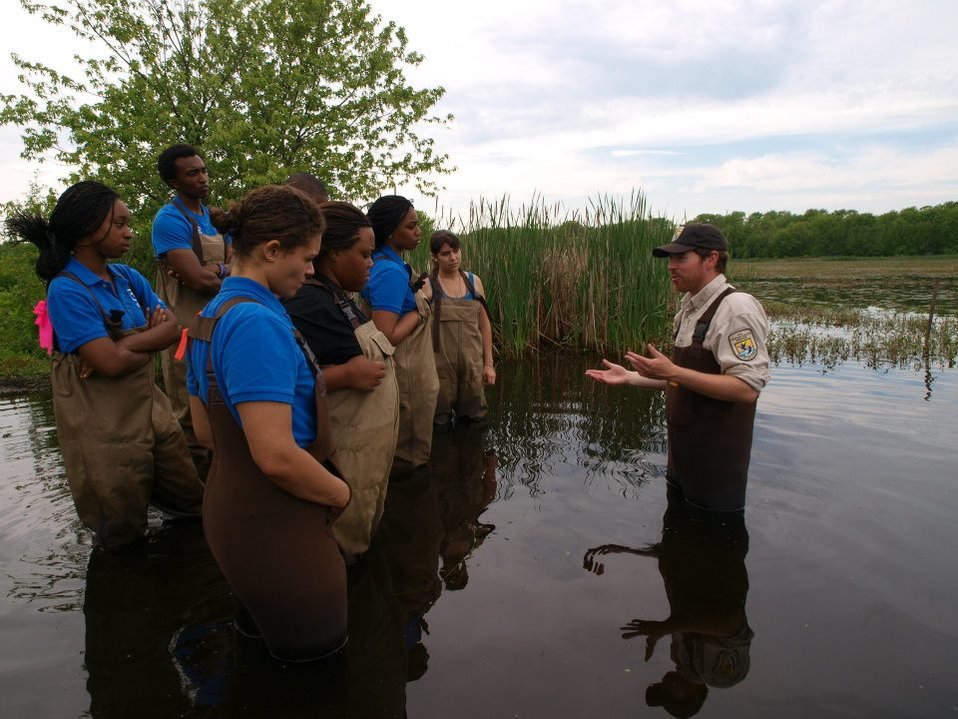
CDIP with USFWS employee

U.S. Fish and Wildlife Service